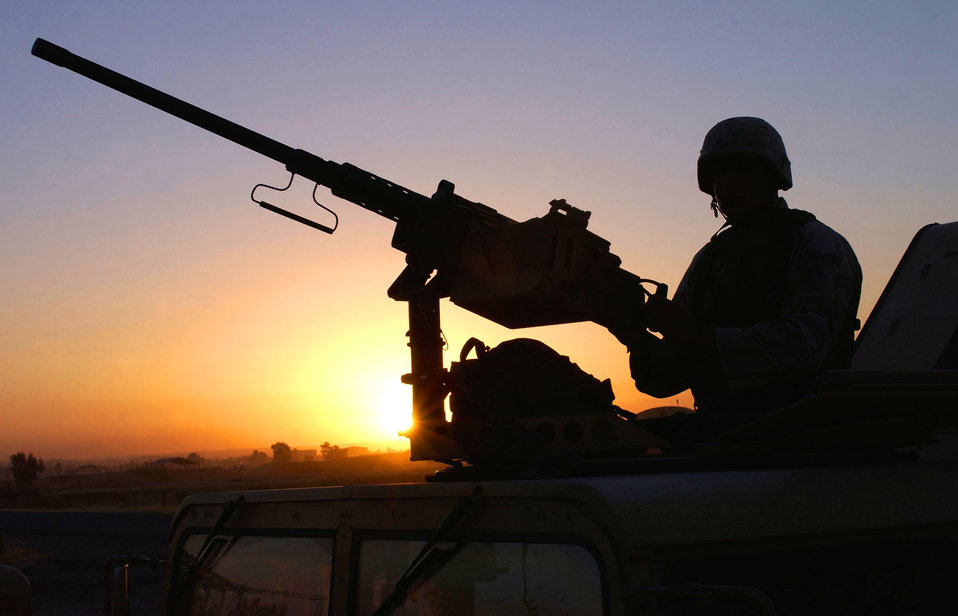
Sentry

SOUTHWEST ASIA -- Senior Airman Raymond Loera, 506th Expeditionary Security Forces Squadron, mans a .50-caliber machine gun atop his HUMVEE just before sunset.